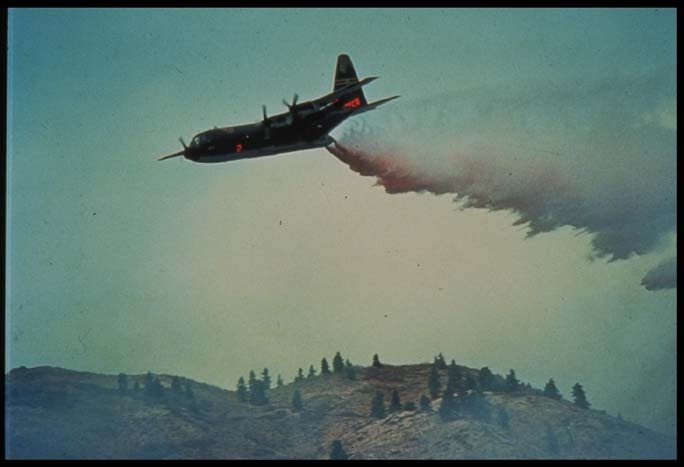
Airtanker drop